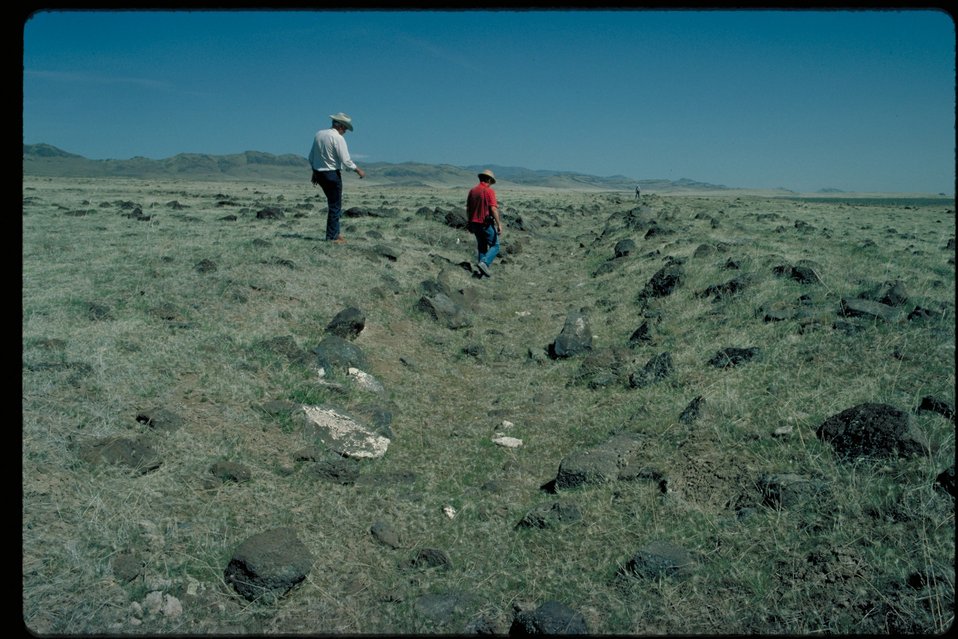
Oregon Trail North of Canyon Creek Lower Snake River District